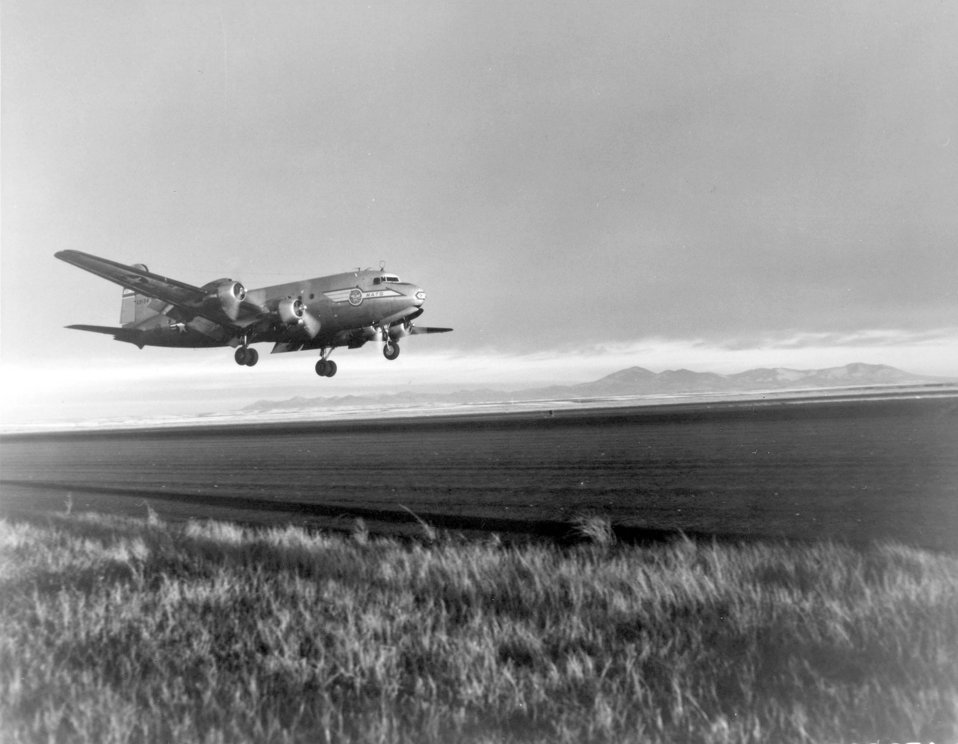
C-54 Skymaster

1940's -- A Douglas C-54 Skymaster practices a